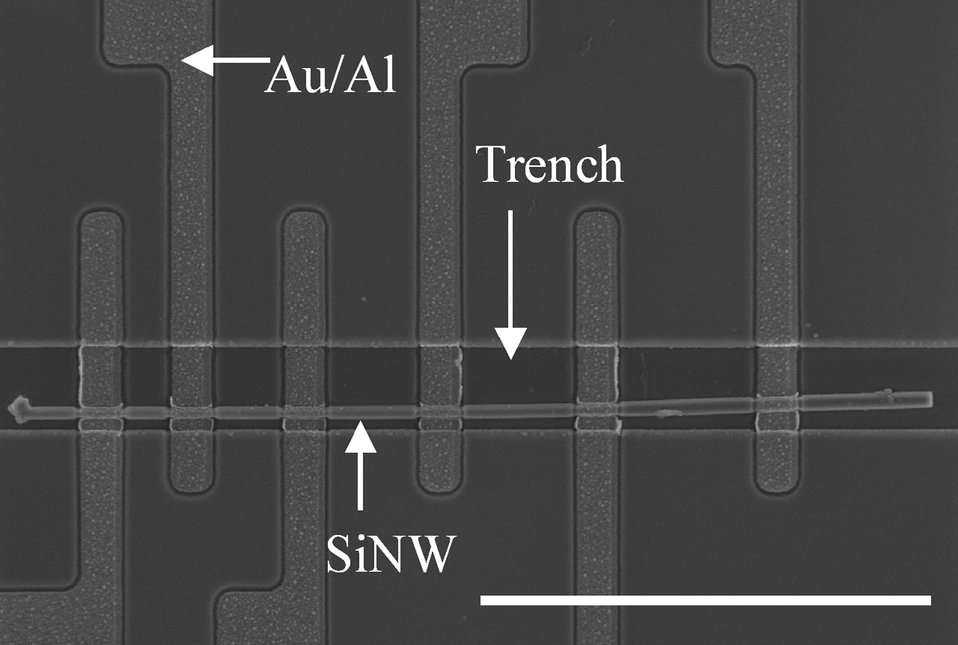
Placing Single Nanowires, NIST Makes the Connection

Scanning electron microscope image shows a single silicon nanowire positioned in an etched trench using NIST's nanowire manipulation technique. The trench helps keep the nanowire in position during the fabrication of the rest of the test structure, which measures metal/nanowire contact resistance. The scale bar is 20 micrometers long.